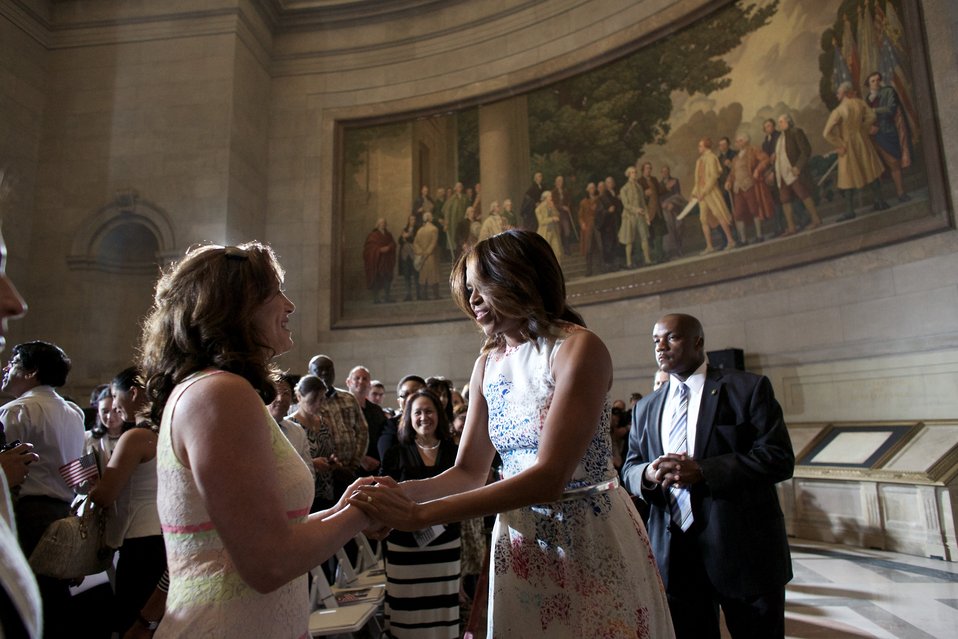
Naturalization Ceremony with Michelle Obama